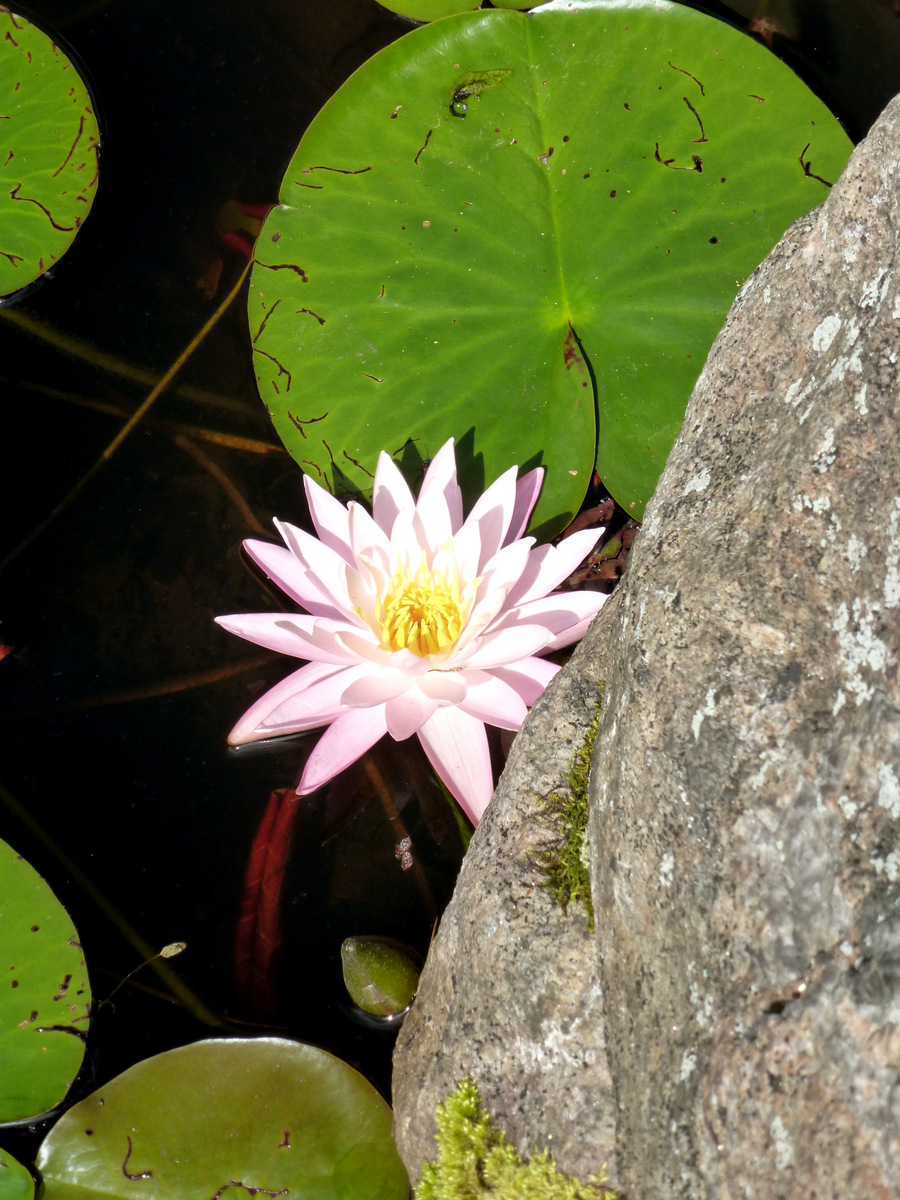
Water lily photographed in Leverett, MA.